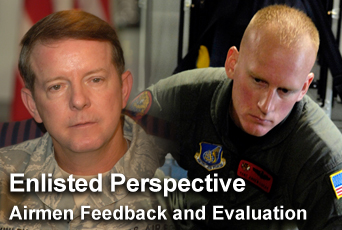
'Perspective' discusses feedback, evaluation

In the newest